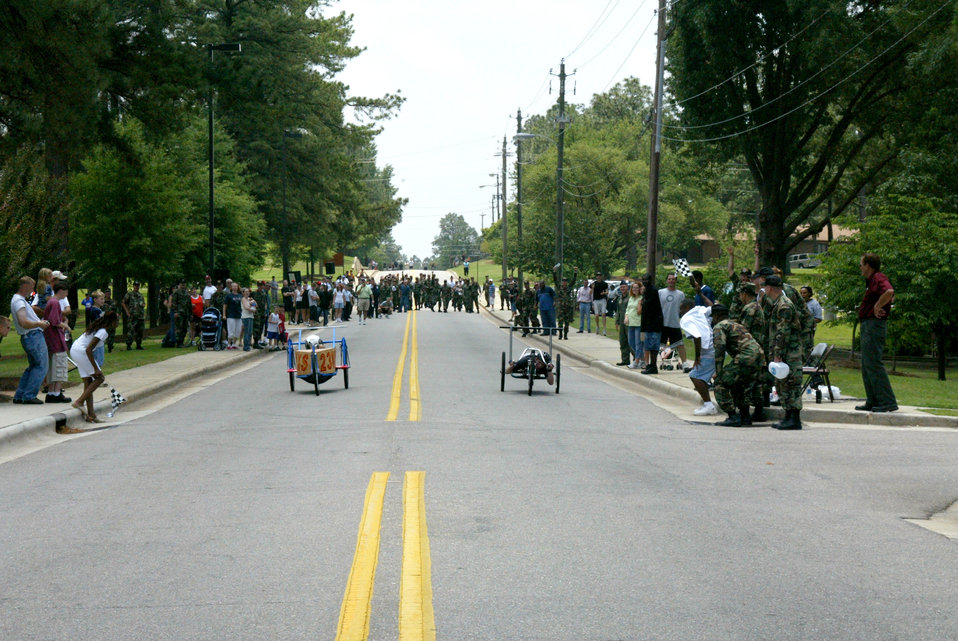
On his soap box

POPE AIR FORCE BASE, N.C. -- Staff Sgt. Jessie Butikofer (right) squeaks by Master Sgt. Steve Hammonds before crossing the finish line to win the Pope Box Derby here recently. Sergeant Butikofer drove the 43rd Civil Engineer Squadron's car, and Sergeant Hammonds drove the 23rd Maintenance Squadron's car.